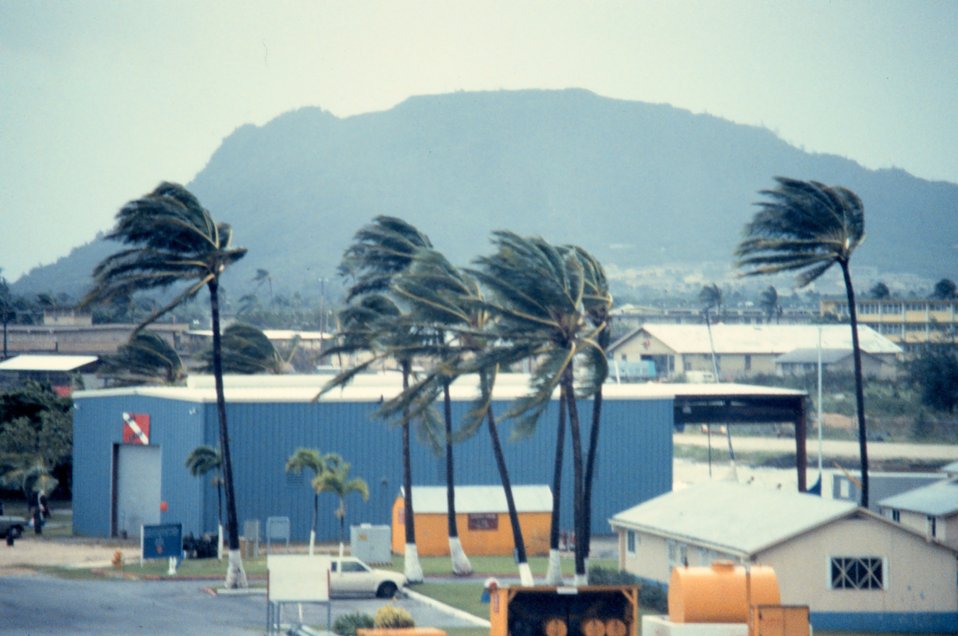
FAIRWEATHER moored at Marine Corps Air Station in Kaneohe Bay. During Hurricane Iwa. Power knocked out to Marine Corps Base. FAIRWEATHER cooked Thanksgiving turkeys for Marine Corps families.